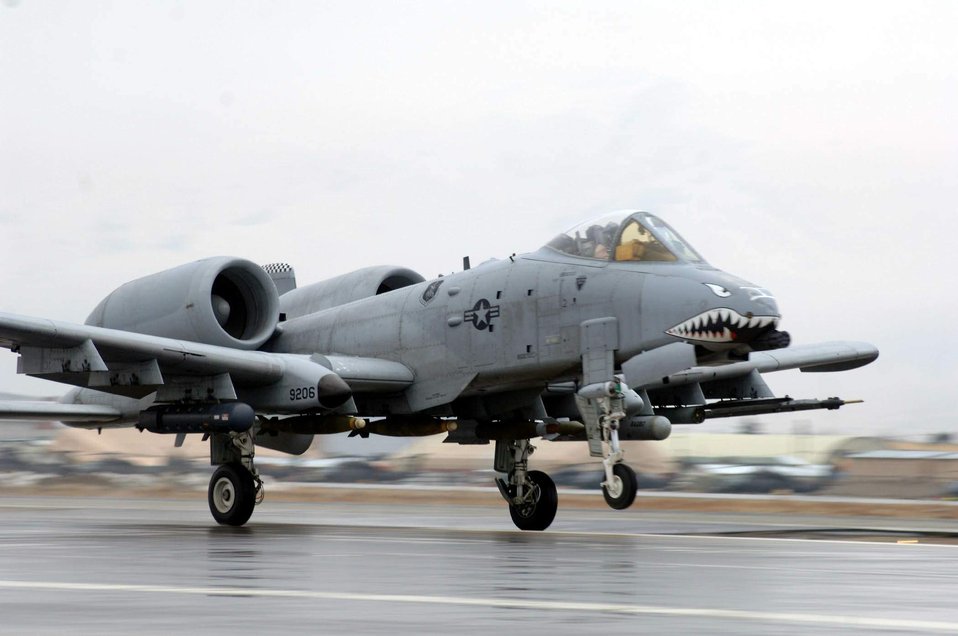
Dec. 29 airpower summary: A-10s provide close-air support

An A-10 Thunderbolt II lands after a recent mission. A-10s can employ a wide variety of conventional munitions, including general purpose bombs, cluster bomb units, laser guided bombs, joint direct attack munitions, wind corrected munitions dispenser or WCMD, AGM-65 Maverick and AIM-9 Sidewinder missiles, rockets, illumination flares, and the GAU-8/A 30mm cannon. A-10s provide close-air support in Operation Enduring Freedom in Afghanistan.